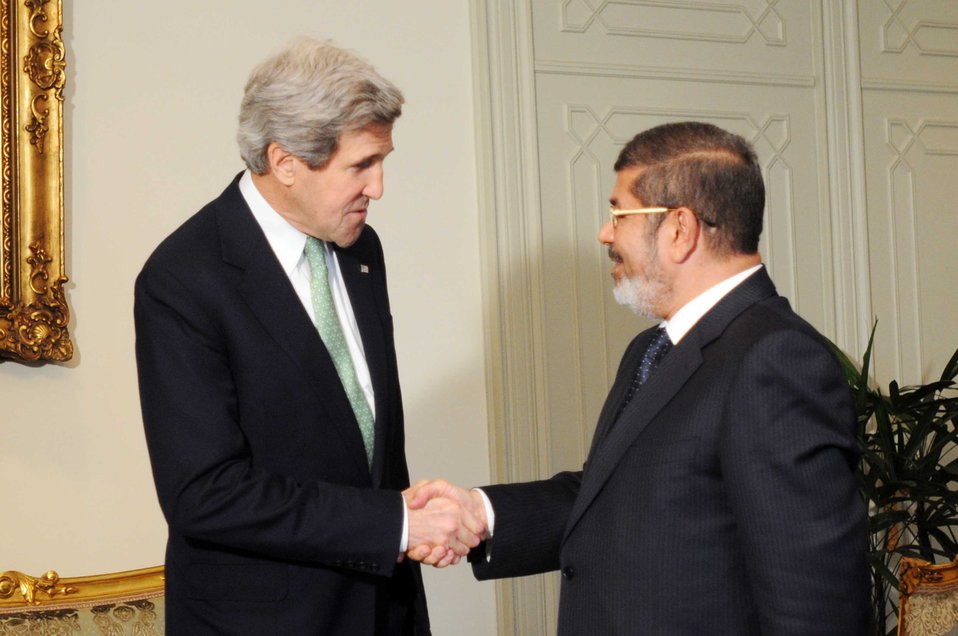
Secretary Kerry Meets With Egyptian President Mohammed Morsy

U.S. Secretary of State John Kerry meets with Egyptian President Mohammed Morsy in Cairo, Egypt, on March 3, 2013.